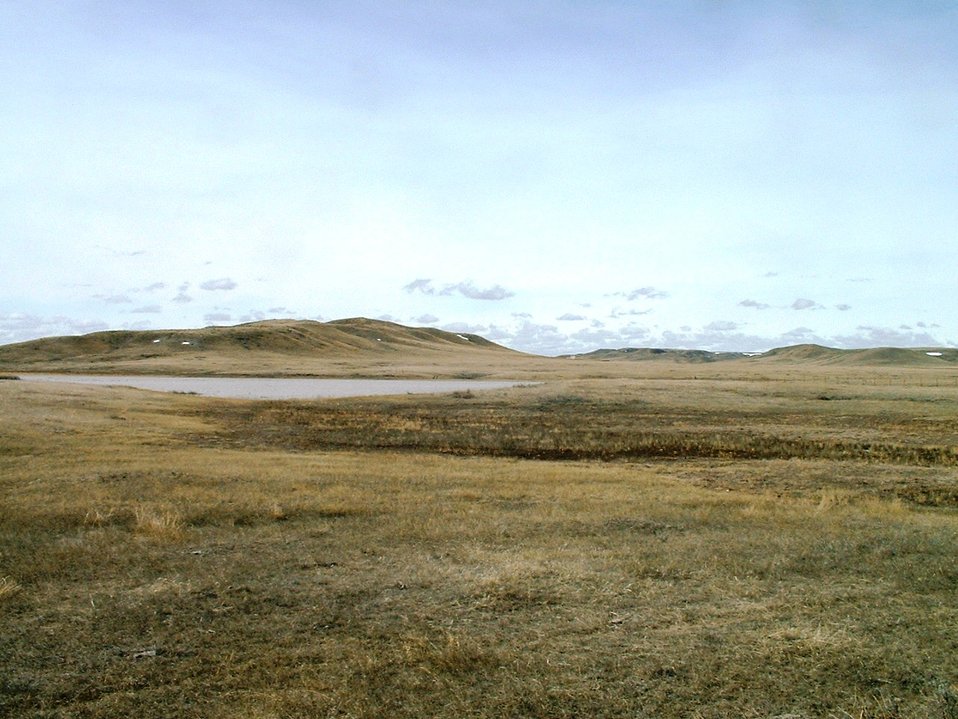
Hewitt Lake NWR